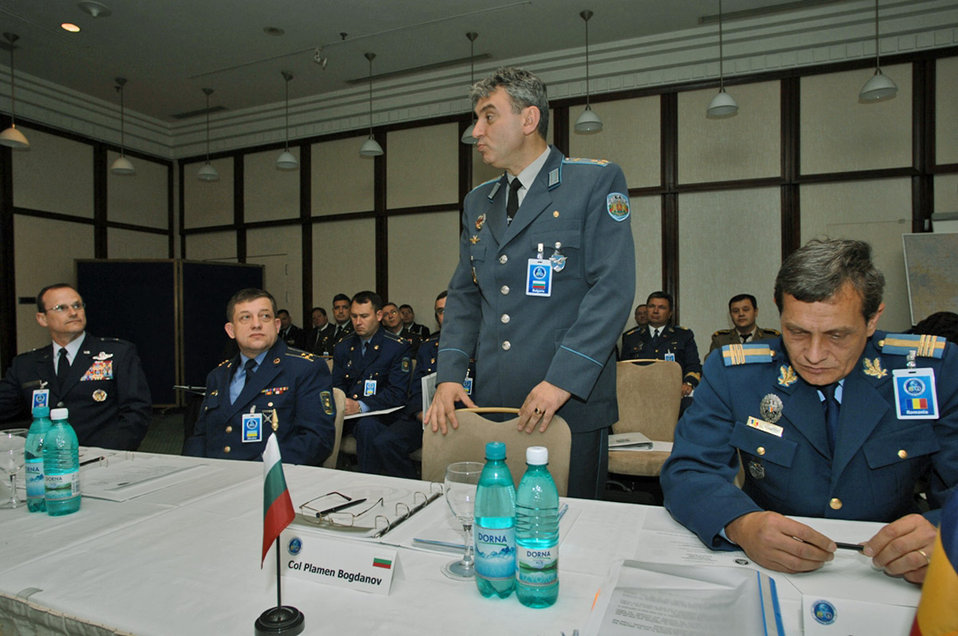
Building partnerships

Bulgarian Col. Plamen Nikolov Bogdanov briefs Air Force Brig. Gen. Richard Johnston (far left) and other participants in the Romania Building Partnership Seminar. The seminar was part of Unified Engagement, a transformation wargame designed to explore future joint warfighting concepts and capabilities. The event in Romania consisted of approximately 60 military leaders and support staff members from eight nations focused on objectives that maximize cooperation and coalition building.